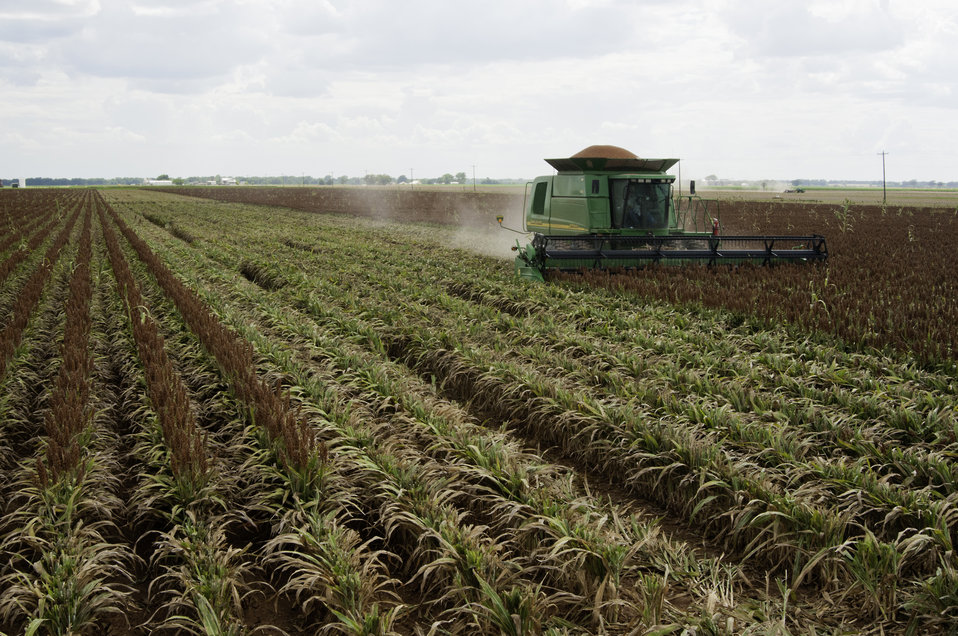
Grain sorghum is harvested on the Wilder Farms in Navasota, TX on Aug. 23, 2013.